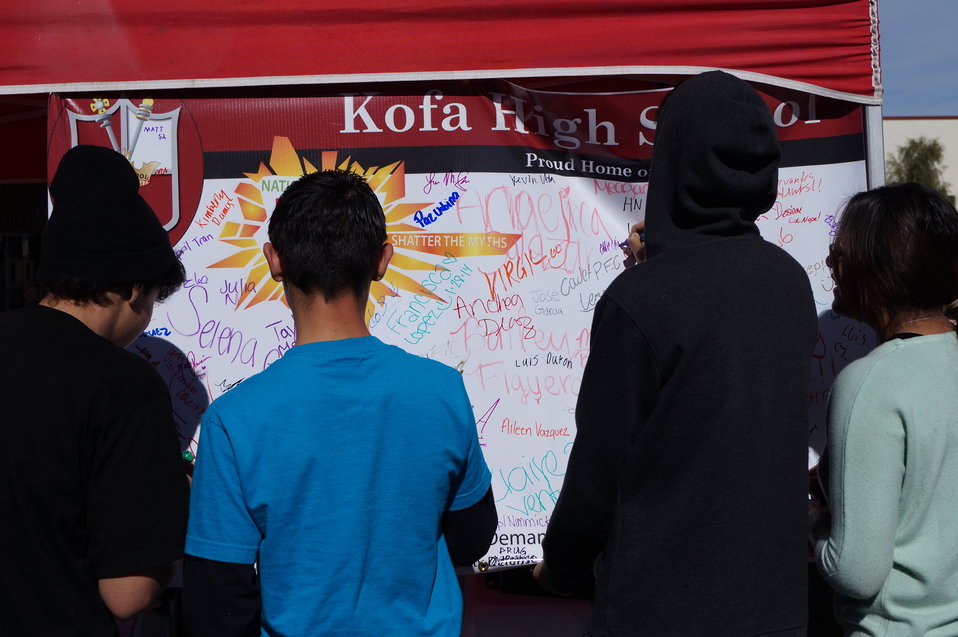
Nationa Drug Facts Week - KOFA HS

The Drug Demand Reduction Program out of Yuma Arizona held numerous events at local schools to support NIDA's National Drug Facts Week, Jan. 27-Feb. 2 2014. Teens participated in drug awareness games, and helped to Shatter the Myths about teen substance abuse.